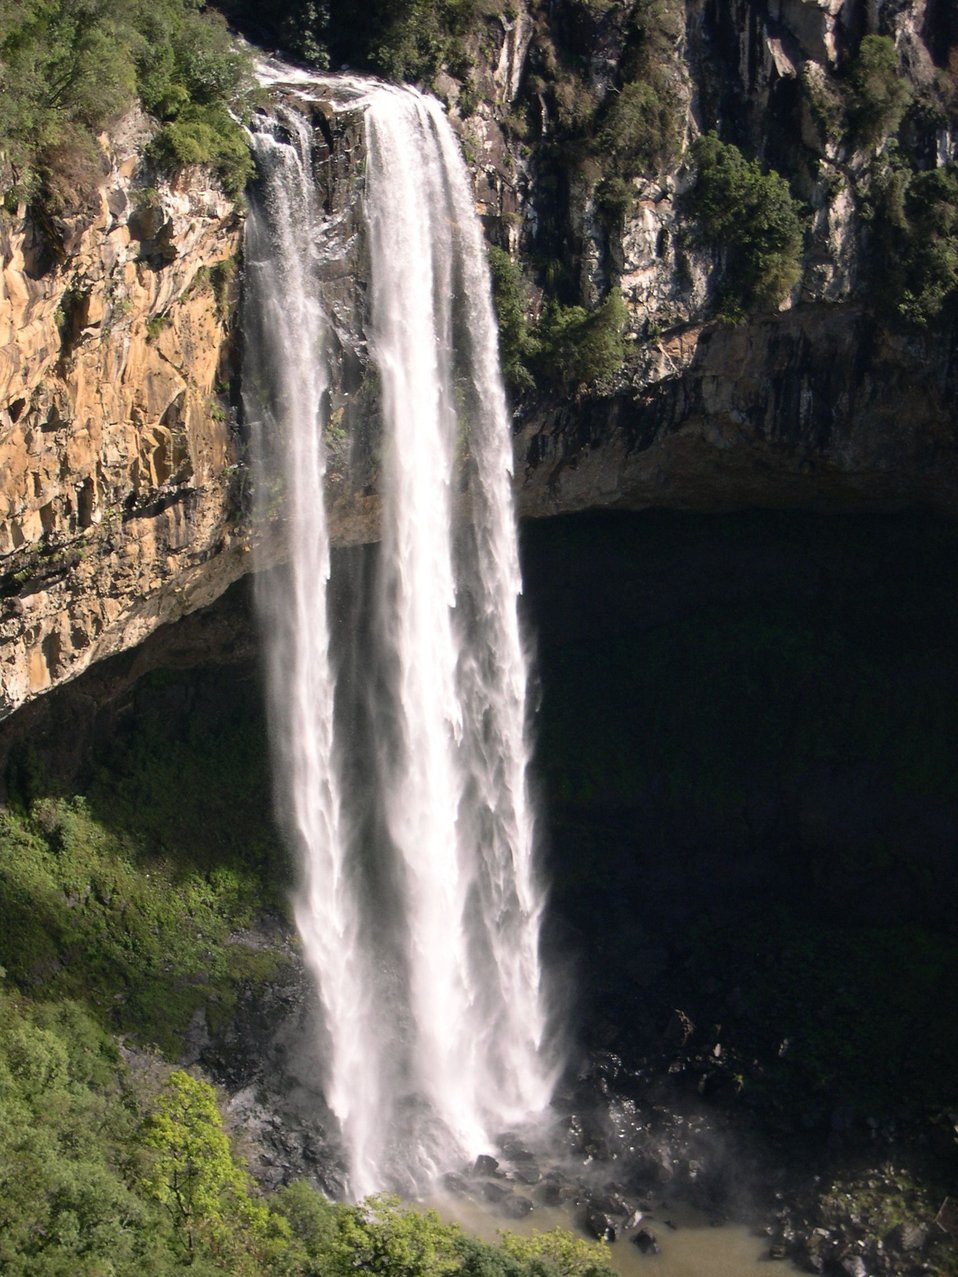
English:
Image title: 130M falls at Caracol Brazil Image from Public domain images website, http://www.public-domain-image.com/full-image/nature-landscapes-public-domain-images-pictures/waterfalls-public-domain-images-pictures/130m-falls-at-caracol-brazil.jpg.html